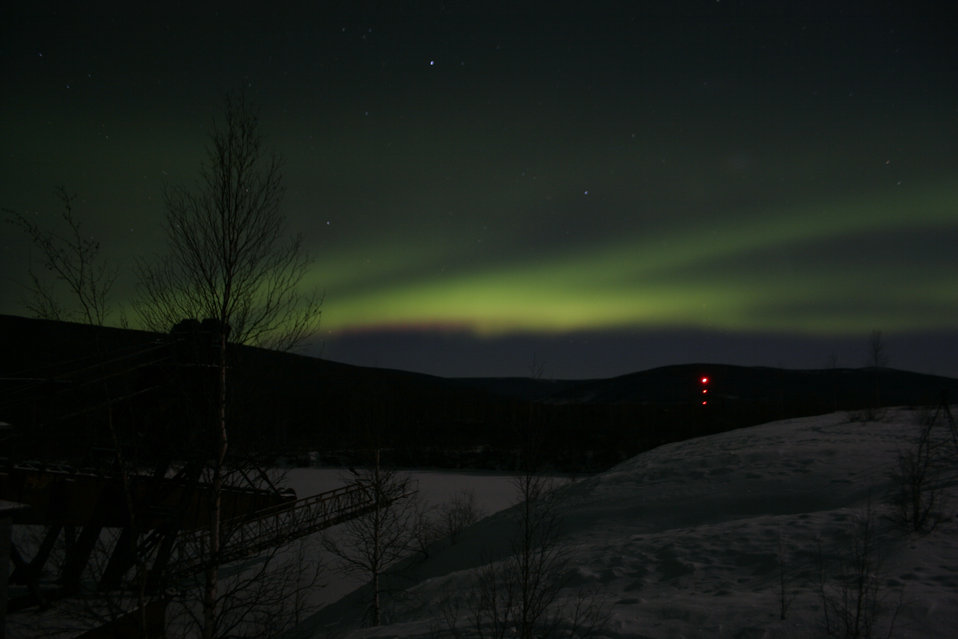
Northern Lights

A view of the Northern Lights